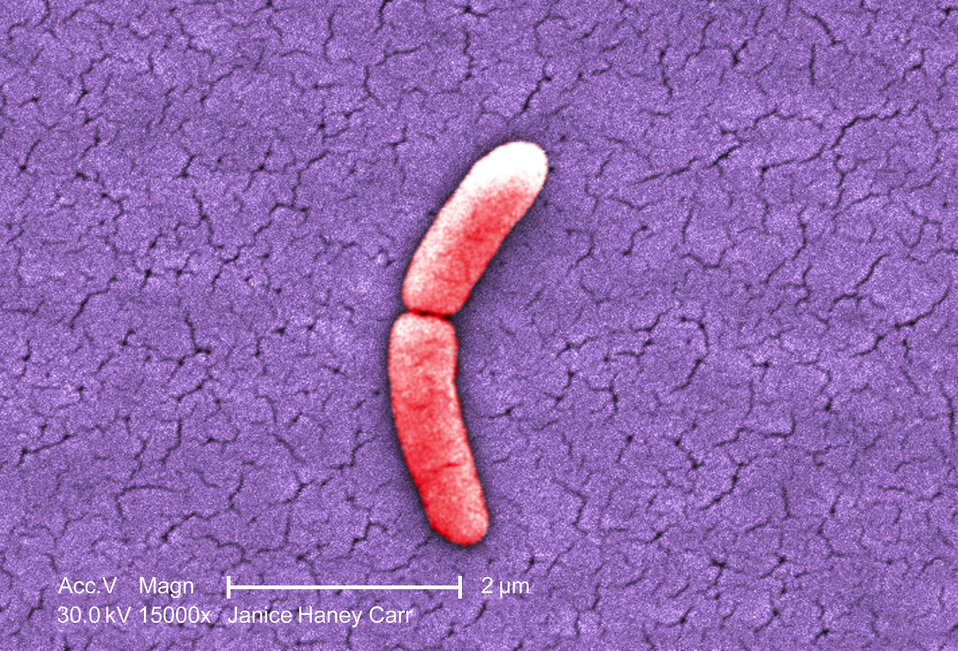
Under a very high magnification of 15000X, this colorized scanning electron micrograph (SEM) revealed the presence of a single Gram-negative Salmonella typhimurium bacterium, which was imaged right at the point where it was undergoing the process of cell division, resulting in the formation of two separate organisms. This dividing bacterium had been isolated from a pure culture.